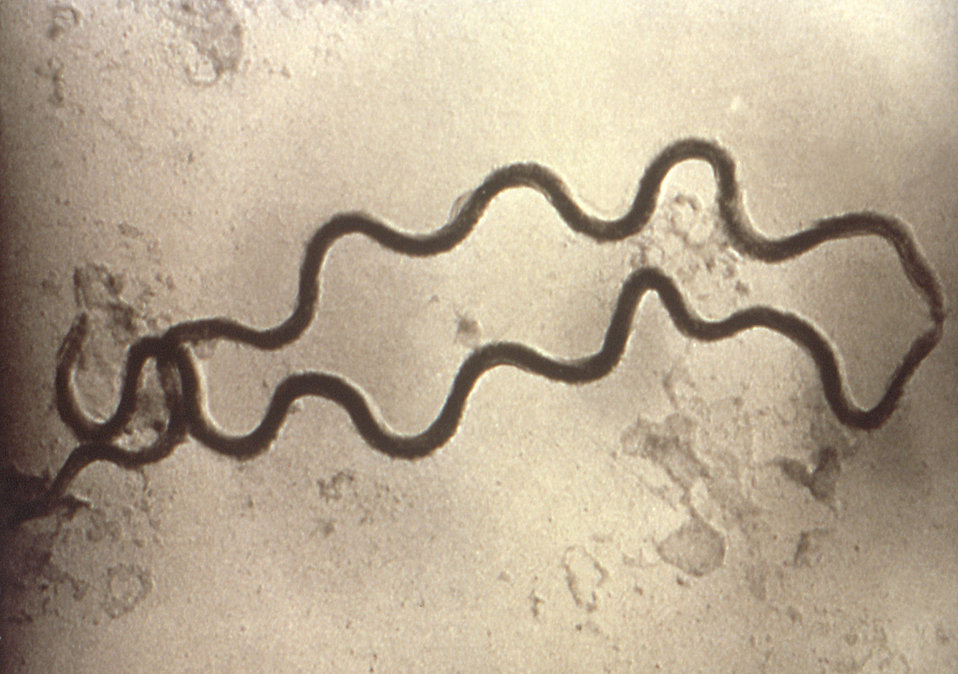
An electron photomicrograph of two spiral-shaped Treponema pallidum bacteria.